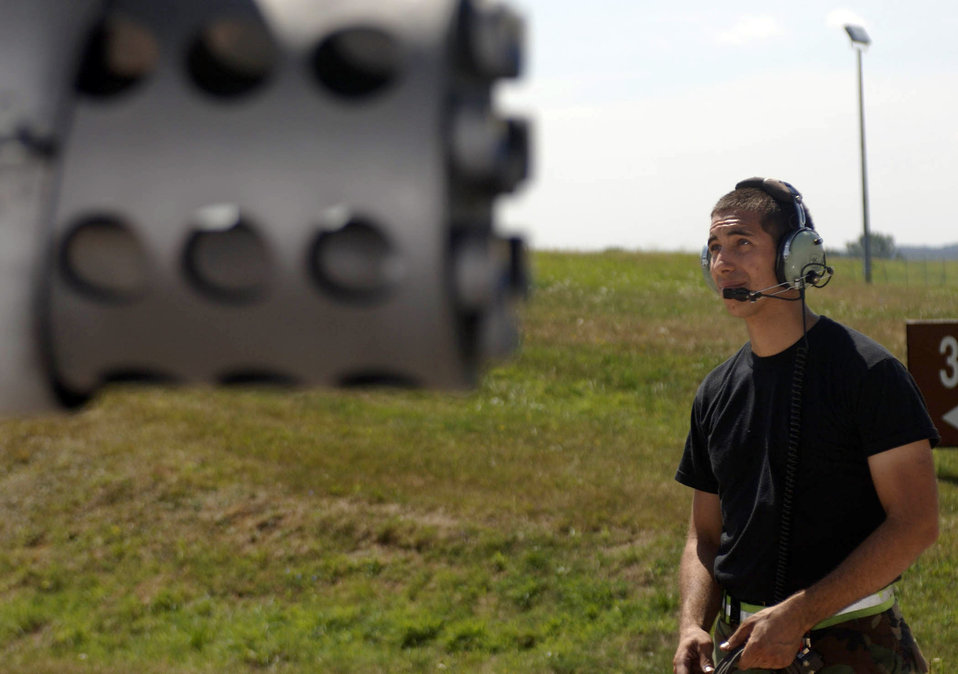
Waiting for the 'all clear'

SPANGDAHLEM AIR BASE, Germany -- Airman 1st Class Eric Gibson waits for instructions from an A-10 Thunderbolt II pilot before launching the aircraft from here. He is a crew chief with the 81st Aircraft Maintenance Unit.